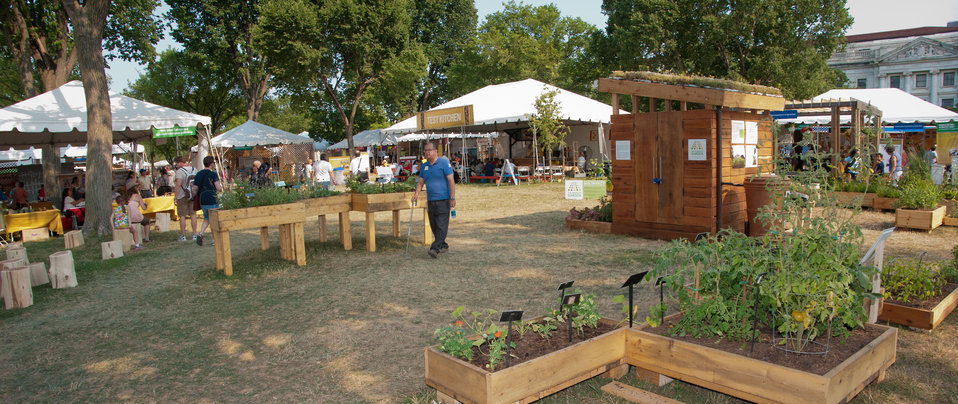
U.S. Department of Agriculture People’s Garden Initiative incorporate and display sustainable practices that nurture, maintain and protect the environment here at this living exhibit, during the 2012 Smithsonian Folklife Festival,in Washington, D.C., Thursday, June 28, 2012. The types of gardens demonstrated include all access, edible, pollinator, and container. These gardens surround a shed with sustainable features like designing with reclaimed materials, making and using compost, setting up a rain barrel, and installing a green roof. 20-minute demonstrations on these sustainable practices are offered daily. One of the three themes this year is “Campus and Community.” It celebrates the 150 years of the USDA and the Land-Grant University System. The U.S. Department of Agriculture (USDA) and the Land-Grant system extend education across the country, contributing to American agriculture success and rural prosperity. “Campus and Community” has demonstrations, discussions, hands-on activities, and entertainment to that showcase the many ways that this partnership works to improve American agriculture and rural life.